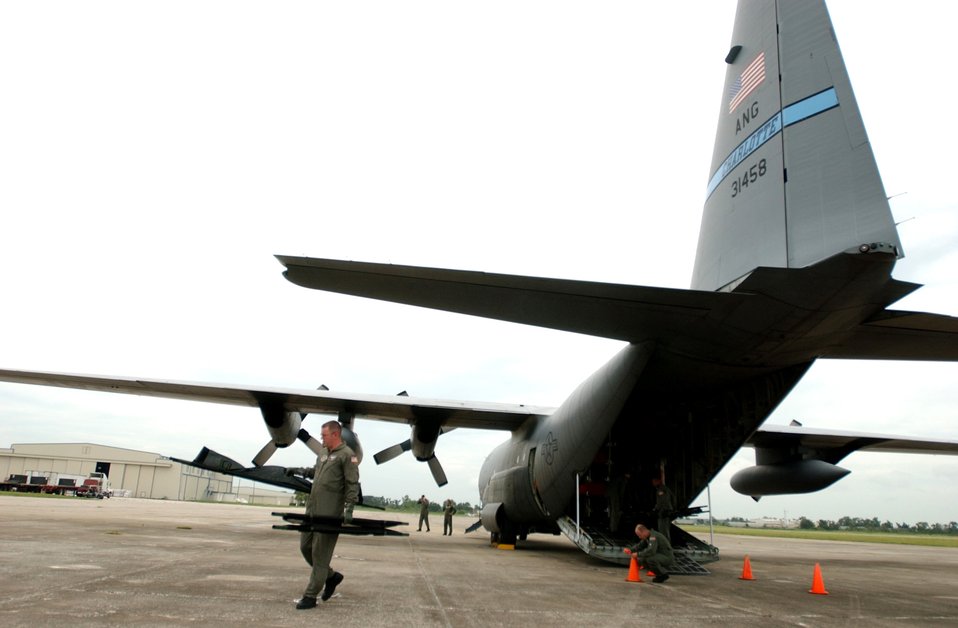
Heading Home

SEBRING AIRPORT, Fla. -- Tech Sgt. Chad Ghorley carries one of the cots used to fly elderly Hurricane Rita evacuees in a C-130 Hercules back to Key West, Fla., Sept. 23. The Air Force is assisting with Hurricane Rita humanitarian operations. Sergeant Ghorley is an aeromedical technician with the North Carolina Air National Guard's 156th Aeromedical Evacuation Squadron.